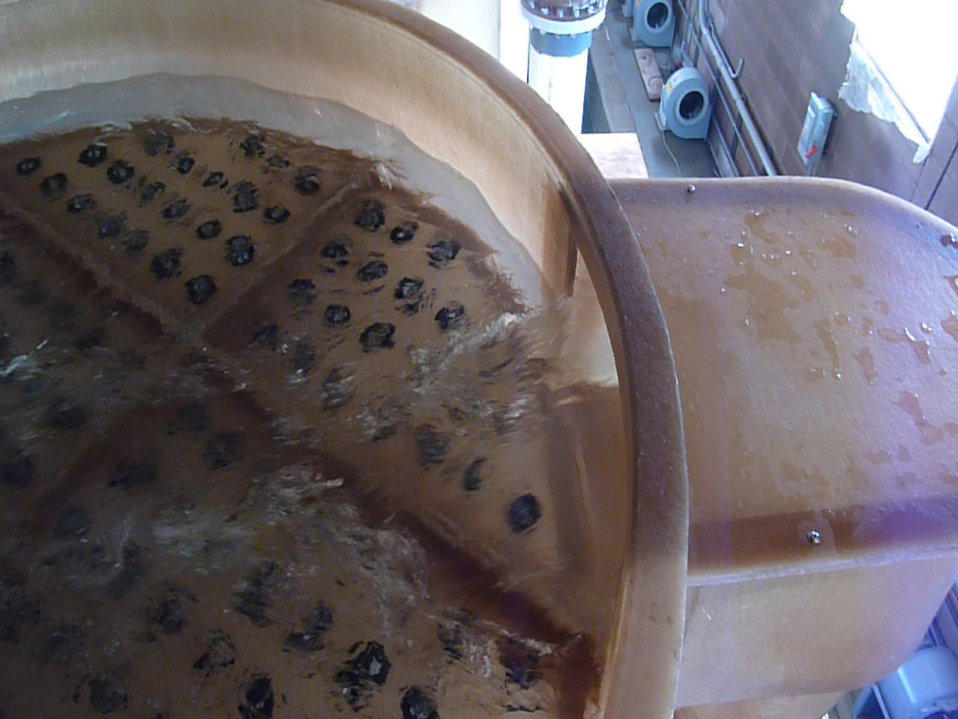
Top view of aeration tower

Water is pumped to the top of the aeration tower to begin the degassing process.